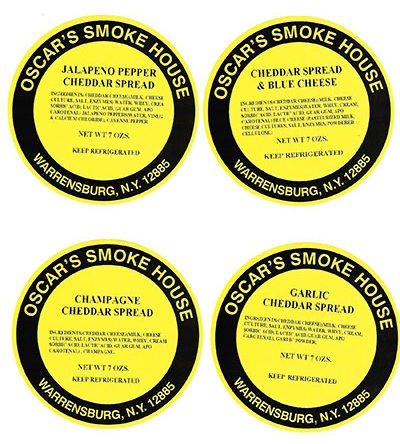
RECALLED – Cheese Spread

March 26, 2014 – Product Recall – Oscar’s Smokehouse, Inc. Recalls “Eleven Varieties (11) Of Cheese Spreads” Because of Possible Health Risk.